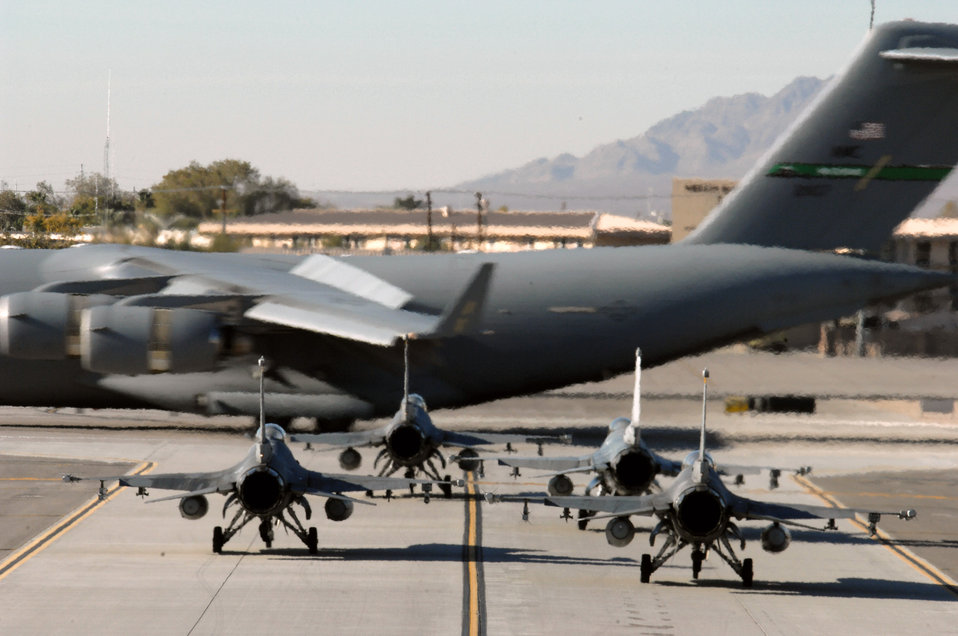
Coming through, wait your turn

A C-17 Globemaster III taxis past a group of F-16 Fighting Falcons Nov. 19 during the Mobility Air Forces Exercise at Nellis Air Force Base, Nev. The exercise tests the ability of airlift crews from 12 bases to join together at a specific time and location to drop a brigade size force anywhere in the world.